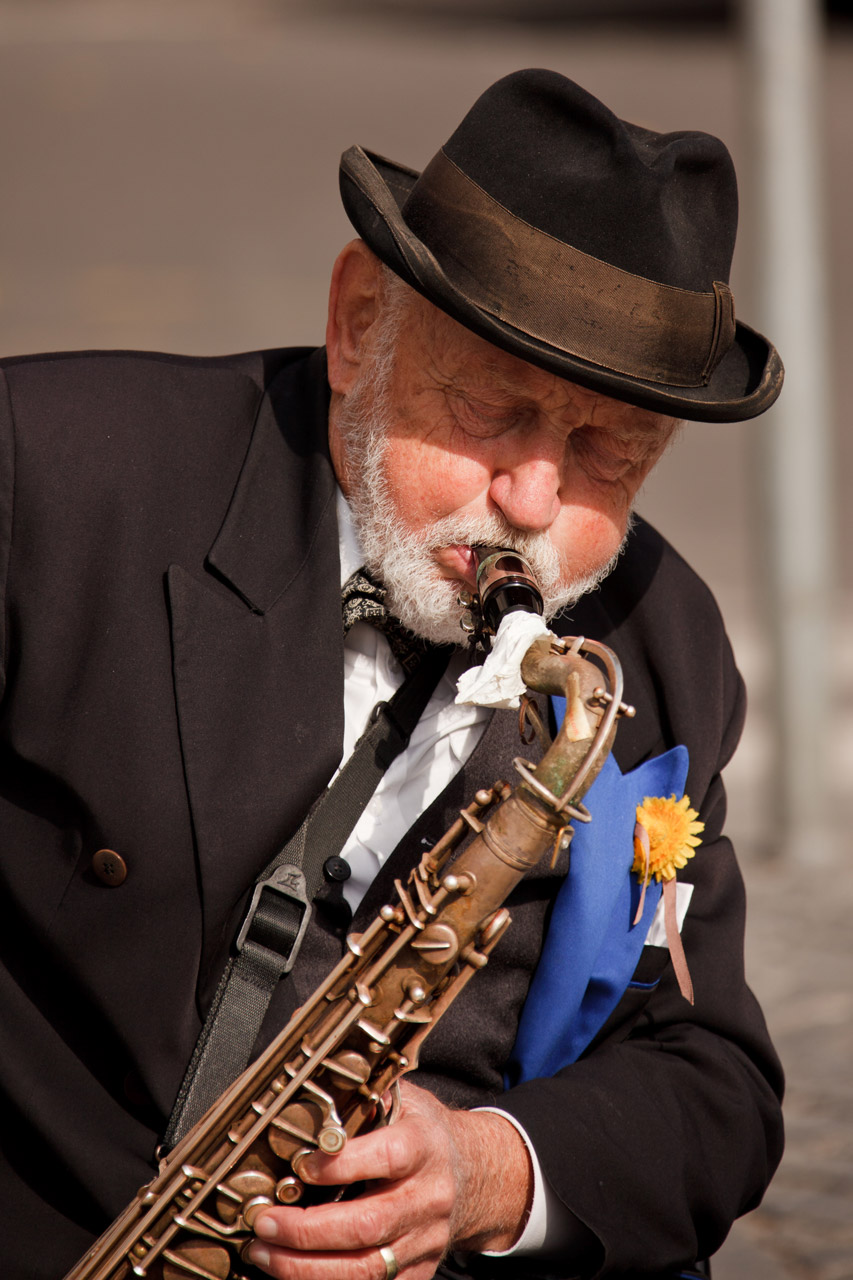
Saxophonist

Older gentleman playing saxophone.